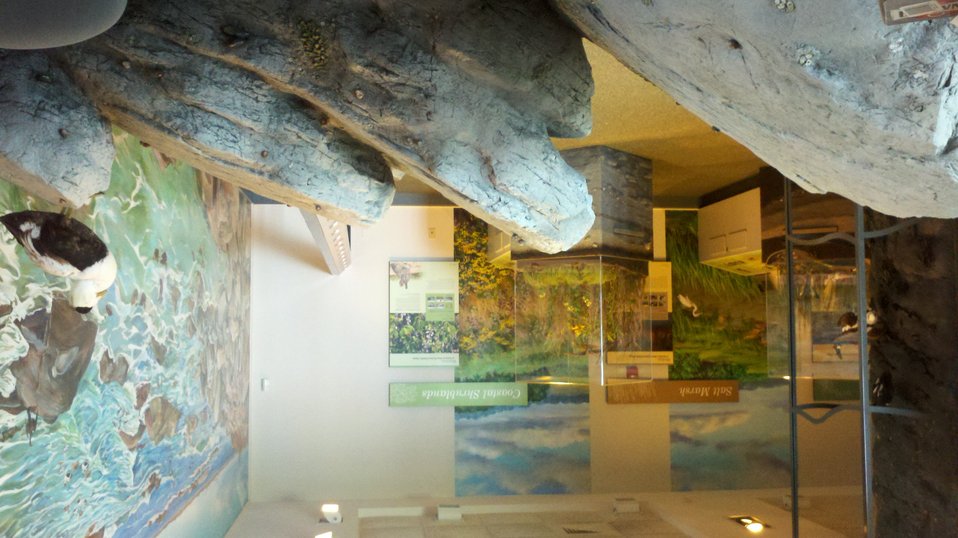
Exhibits

Newly renovated exhibits at Sachuest Point National Wildlife Refuge visitor center, which re-opened on August 24, 2012.